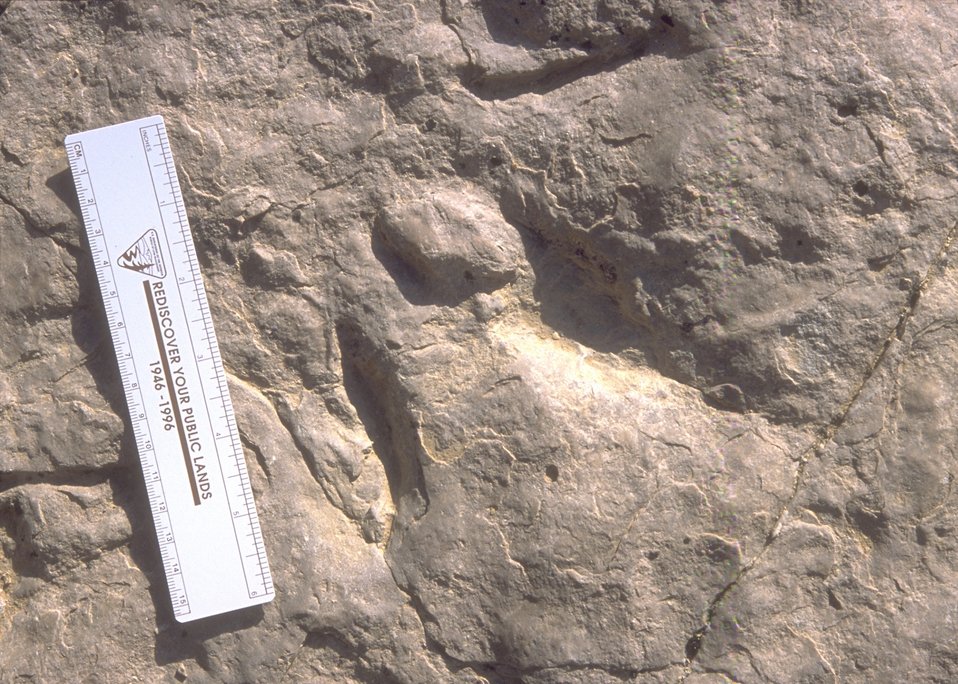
Detail of dinosaur tracks at the Red Gulch Dinosaur Tracksite, Worland Field Office.